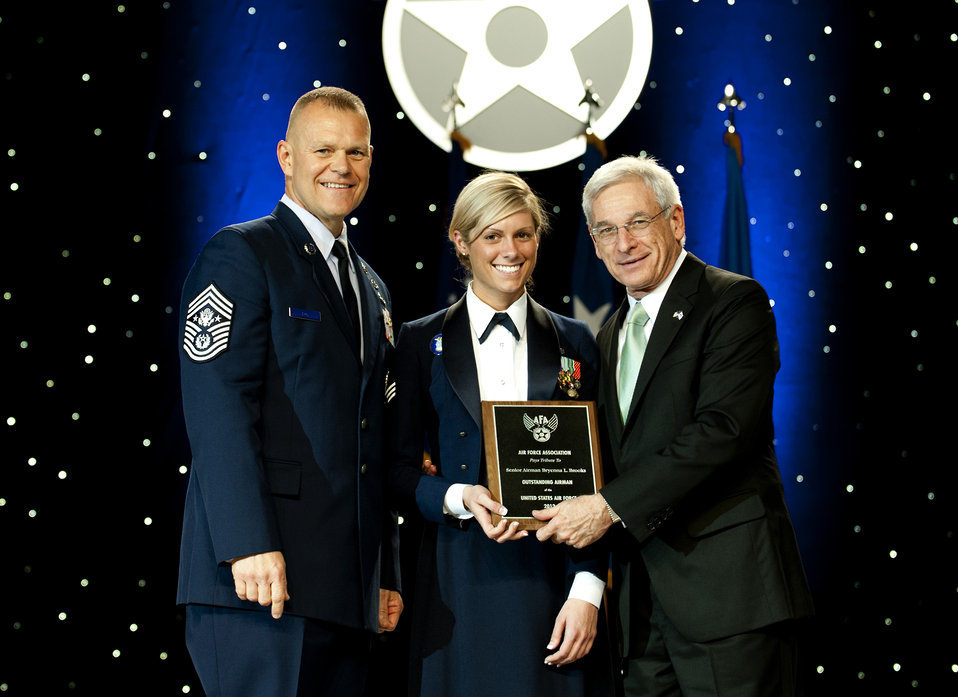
12 Outstanding Airmen of the Year

Chief Master Sgt. of the Air Force James Roy, left, and Sandy Schlitt, right, Air Force Association's chairman of the board, present a plaque to Senior Airman Bryenna Brooks during the 12 Outstanding Airmen of the Year reception and awards dinner in Washington, D.C., Sept. 17, 2012. The recipients were recognized for superior leadership, job performance, community involvement and personal achievements. Brooks is with the 2nd Medical Operations Squadron from Barksdale Air Force Base, La.